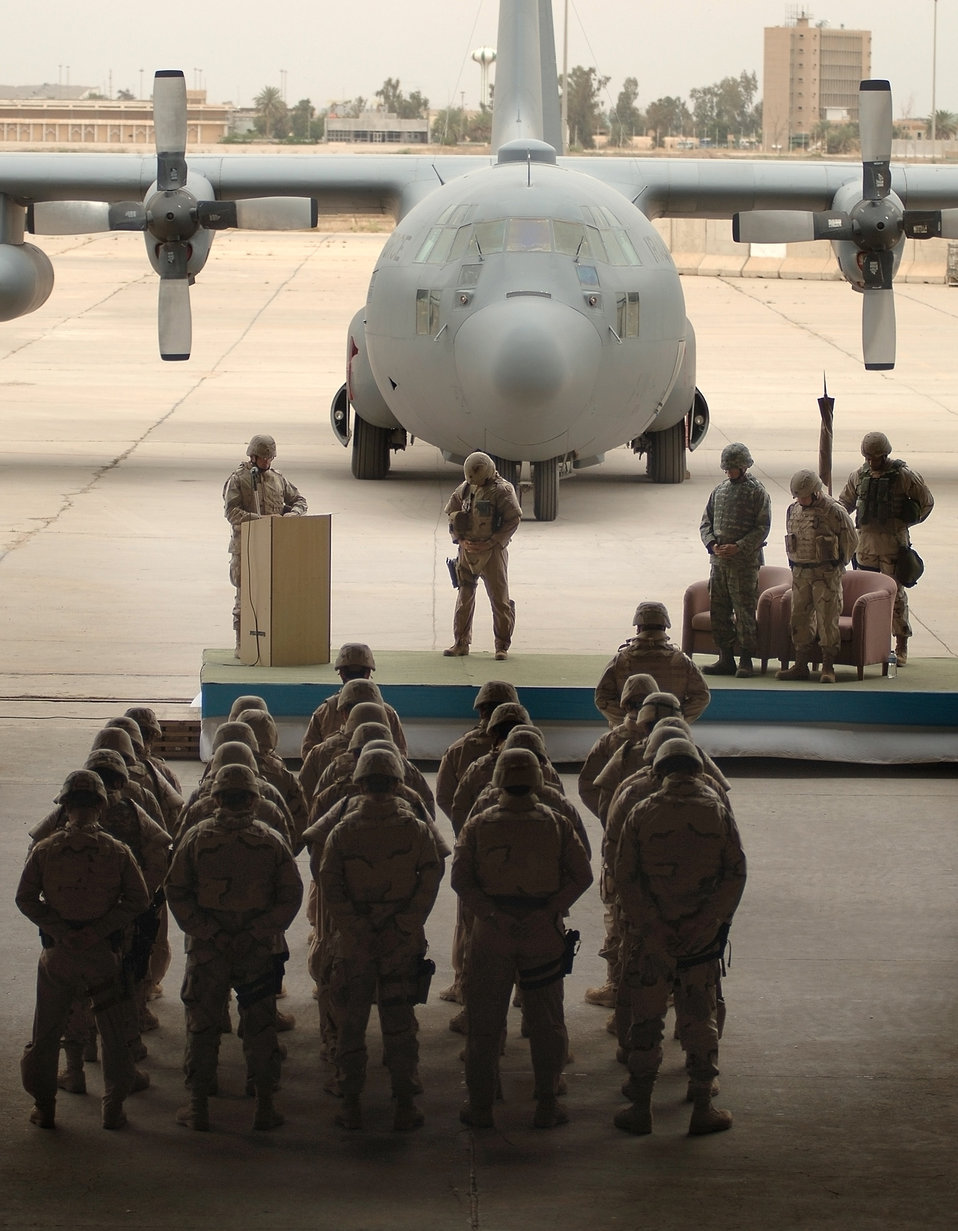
Operation Iraqi Freedom

Baghdad, Iraq --Members of the 370th Air Expeditionary Advisory Group bow their heads in invocation during the Unit Activation ceremony of the 370th AEAG on New Al Muthana Air Base April 22.